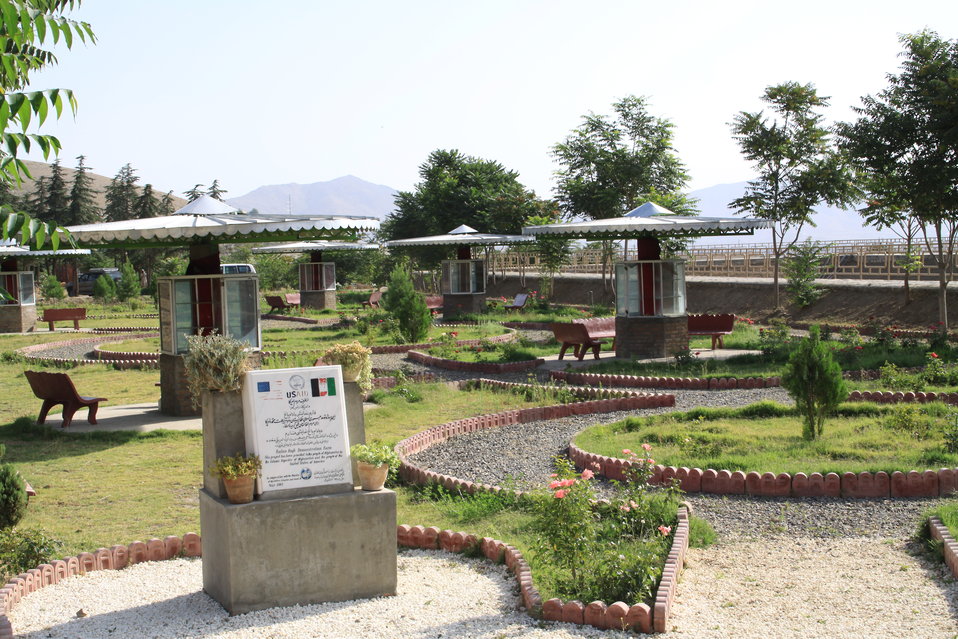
Badam Bagh Farm